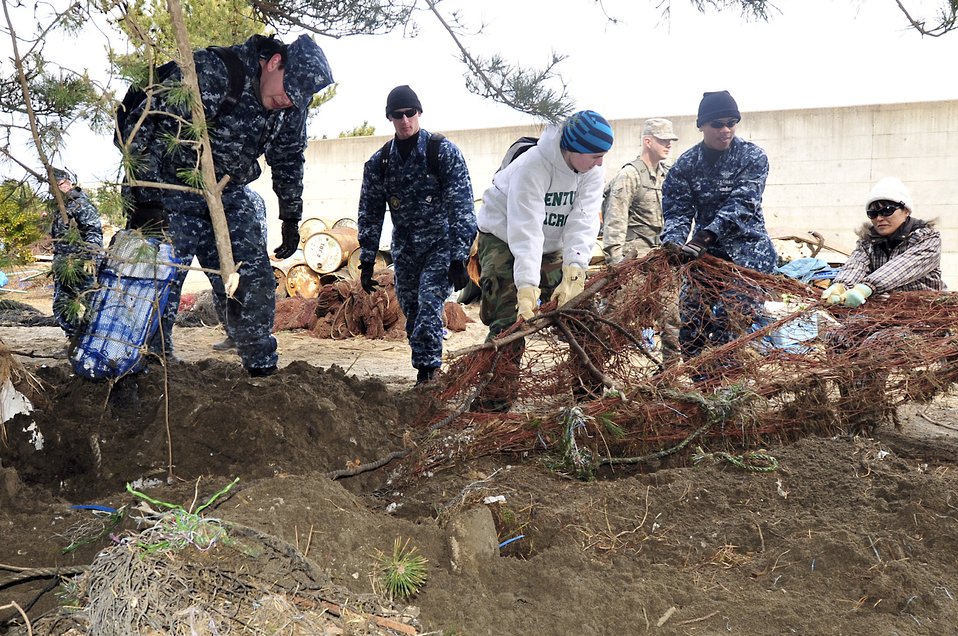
Misawa Air Base coordinates volunteer efforts

MISAWA AIR BASE, Japan -- Airmen and Sailors help to clean up trash and debris at the Misawa City fishing port Mar. 19. Misawa residents have been volunteering their time to help out the local community since Mar. 14.